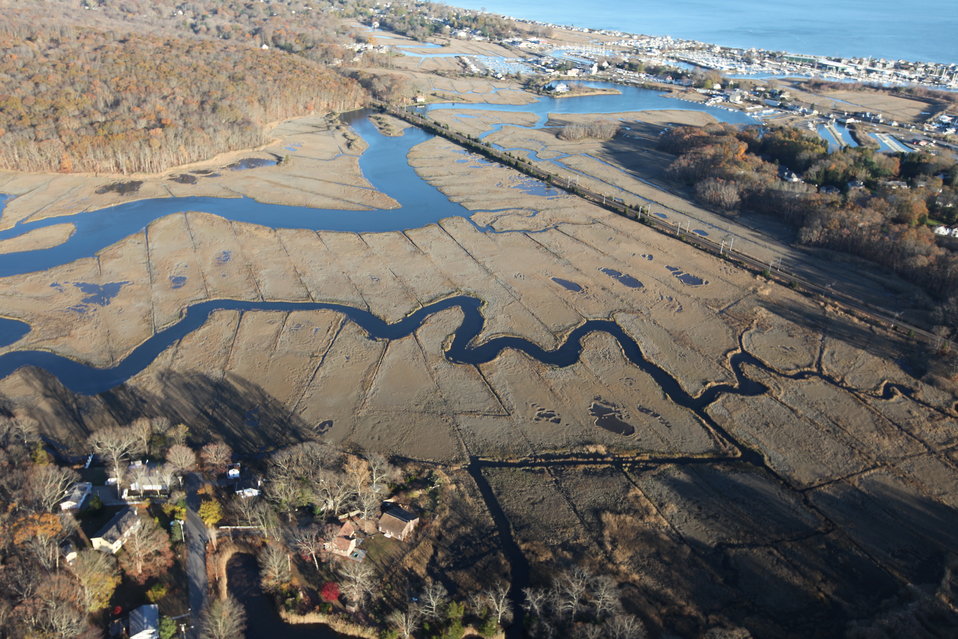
Stewart B. McKinney National Wildlife Refuge (CT)

Aerial view of marsh at Stewart B. McKinney National Wildlife Refuge in aftermath of storm Sandy.